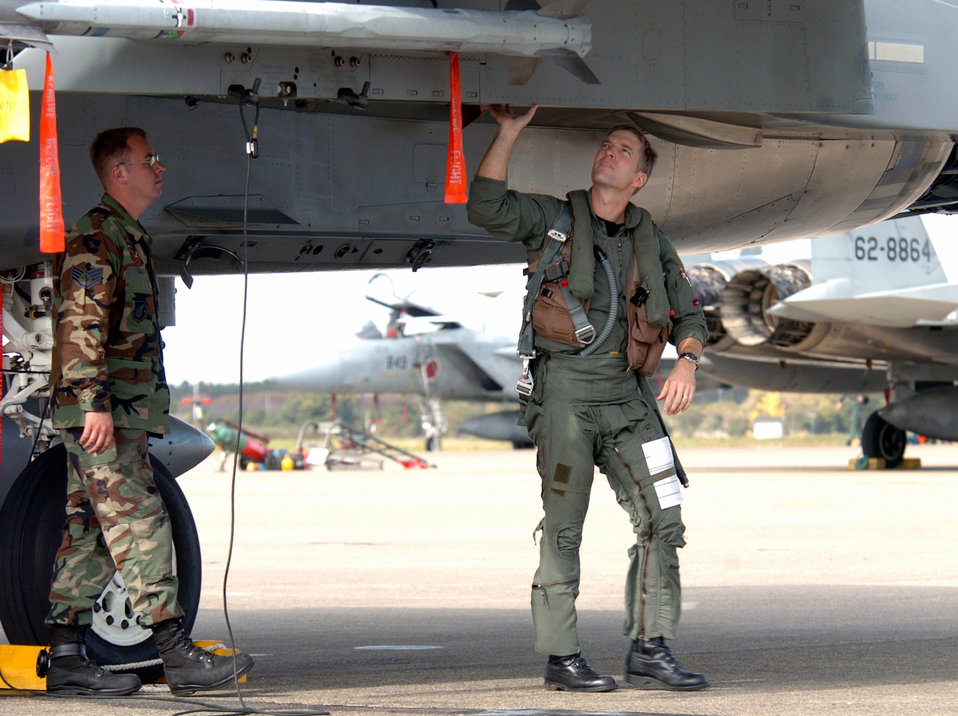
So long Sword

HHYAKURI AIR BASE, Japan -- Staff Sgt Kevin Hall (left) and Lt. Col Kevin Robbins conduct a pre-flight check of their aircraft here during exercise Keen Sword 2005. It is the eighth such field training exercise since 1986. The exercise, which ended Nov. 19, is designed to increase the defensive readiness of Japanese and American forces through training in air, ground and sea operations, and to improve interoperability between the countries. Colonel Robbins is an F-15 Eagle pilot from the 67th Fighter Squadron at Kadena Air Base, Japan. Sergeant Hall is a crew chief.